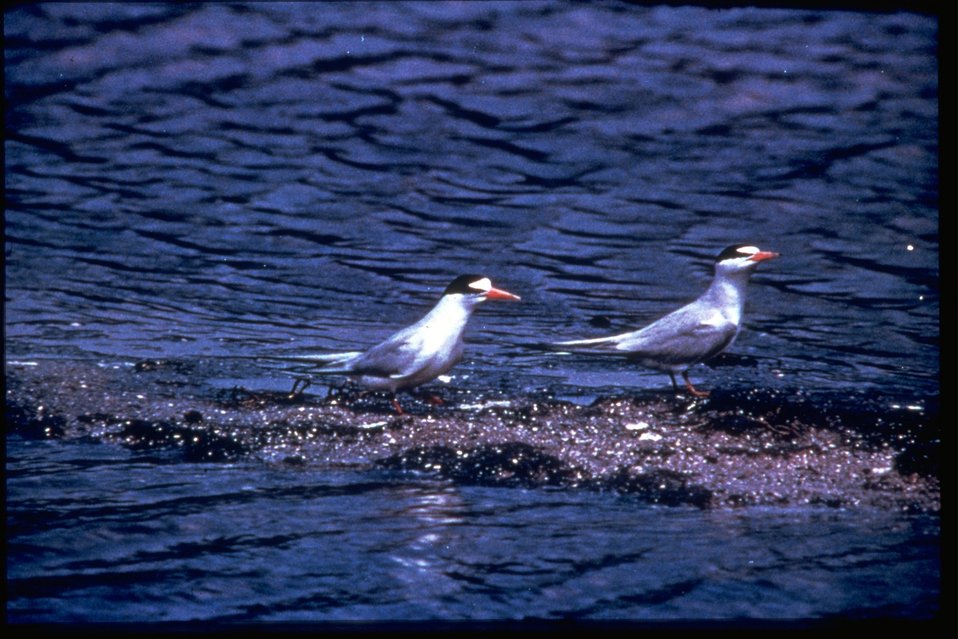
Terns running through some body of water.